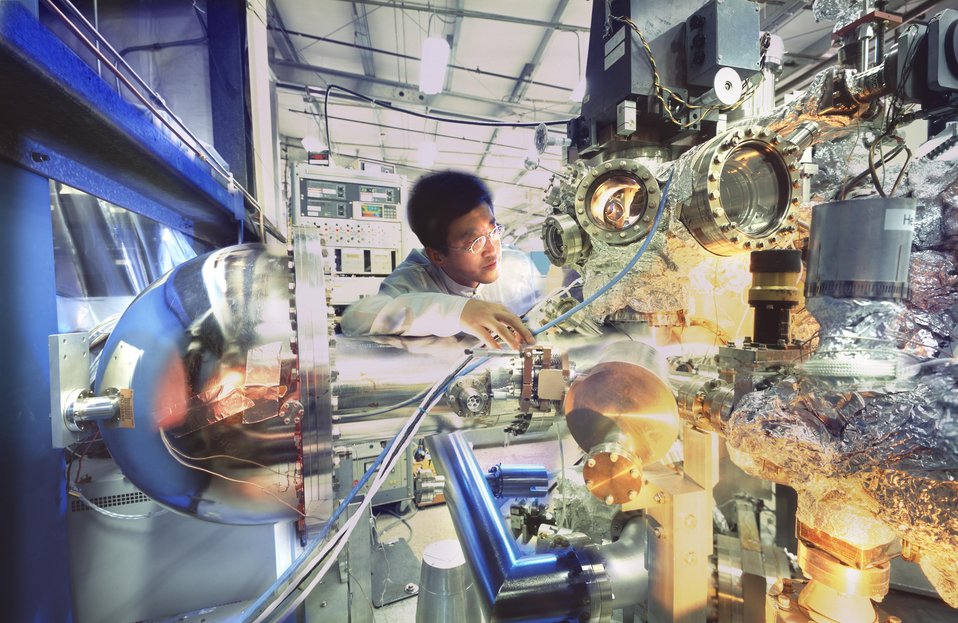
PHYSICIST CHECKING EXPERIMENTAL EQUIPMENT IN THE STANFORD SYNCHROTRON RADIATION LABORATORY.

SSRL IS A DIVISION OF SLAC DEVOTED TO RESEARCH USING SYNCHROTRON RADIATION, THE ELECTROMAGNETIC RADIATION EMITTED WHEN CHARGED PARTICLES TRAVEL IN CURVED PATHS. SSRL IS FUNDED BY DOE AS A NATIONAL USER FACILITY. THERE ARE 26 EXPERIMENTAL STATIONS ON THE 10 MAIN BEAM LINES ON THE 3 GEV STORAGE RING SPEAR, MAKING IT POSSIBLE FOR 26 EXPERIMENTS TO RUN AT THE SAME TIME.